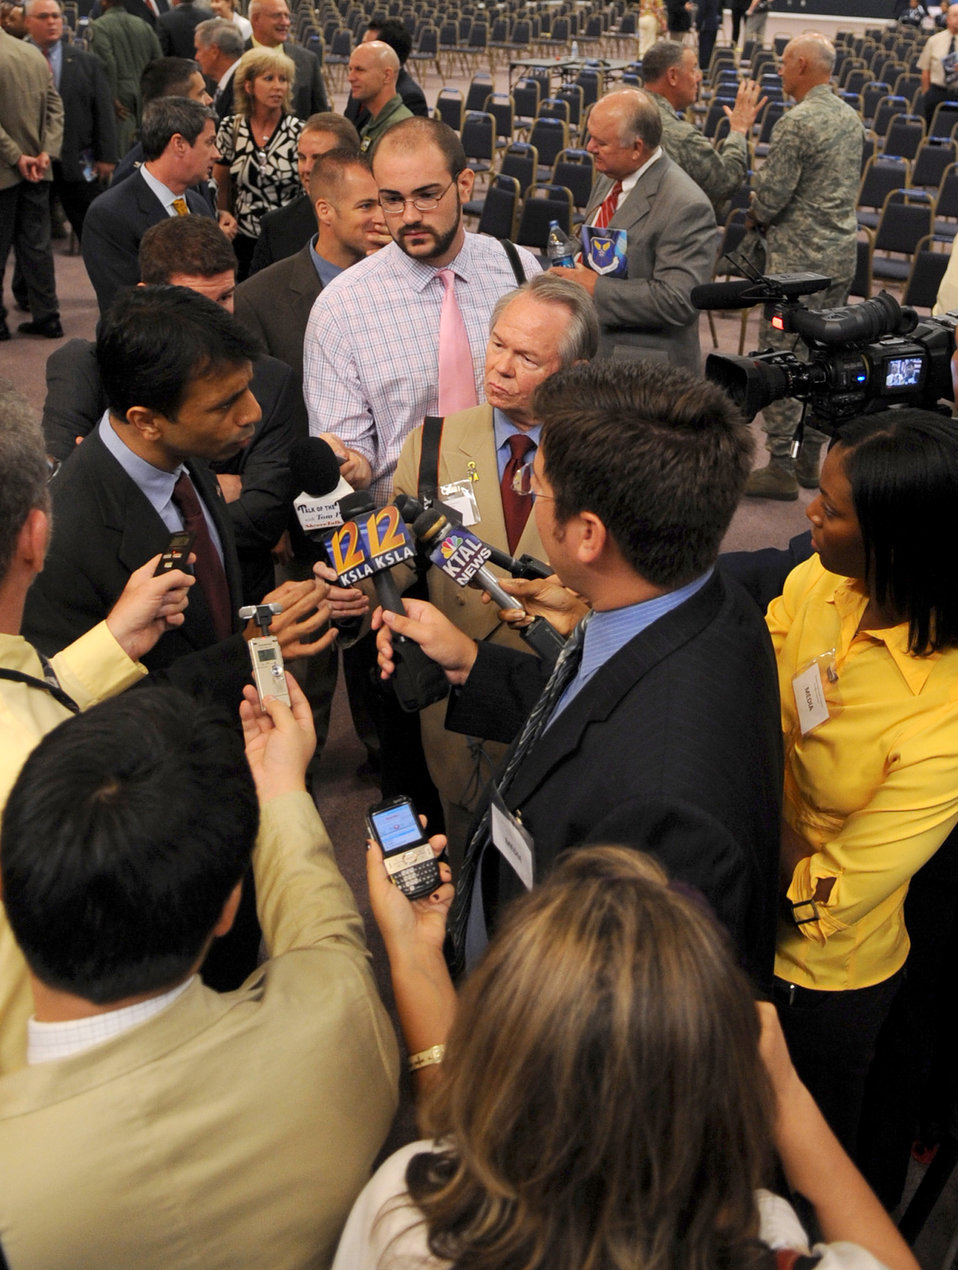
Air Force Global Strike Command activated

Media representatives interview Louisiana Governor Bobby Jindal, following the Air Force Global Strike Command activation ceremony Aug. 7 at Barksdale Air Force Base, La. The new command will bring an estimated $1.6 million annually to the Shreveport-Bossier City, La., area.